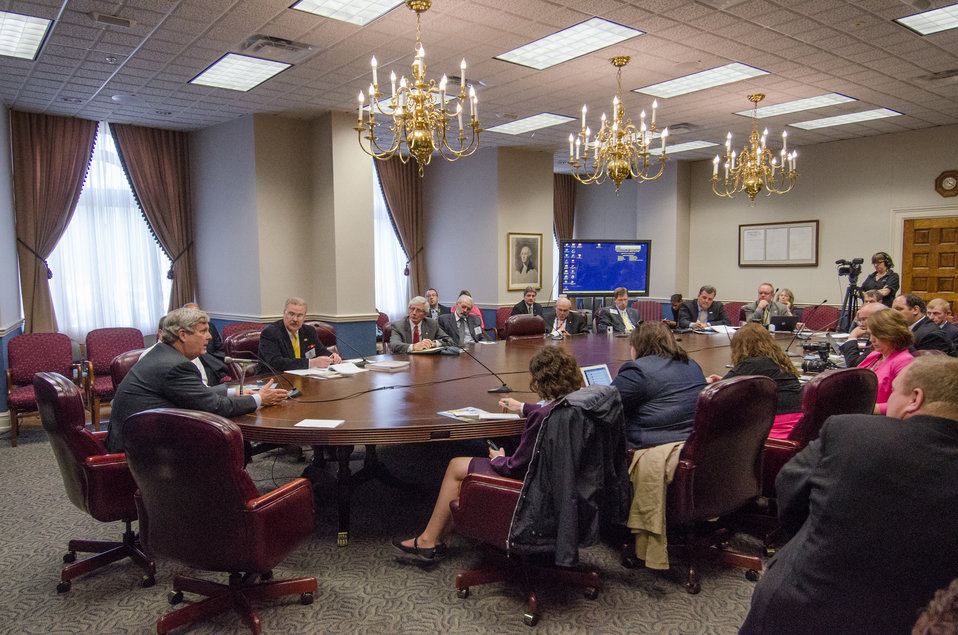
Agriculture Secretary Tom Vilsack speaks with and answers questions from farm broadcasters at the U.S. Department of Agriculture (USDA) on Tuesday, May 14, 2013, in Washington, D.C.